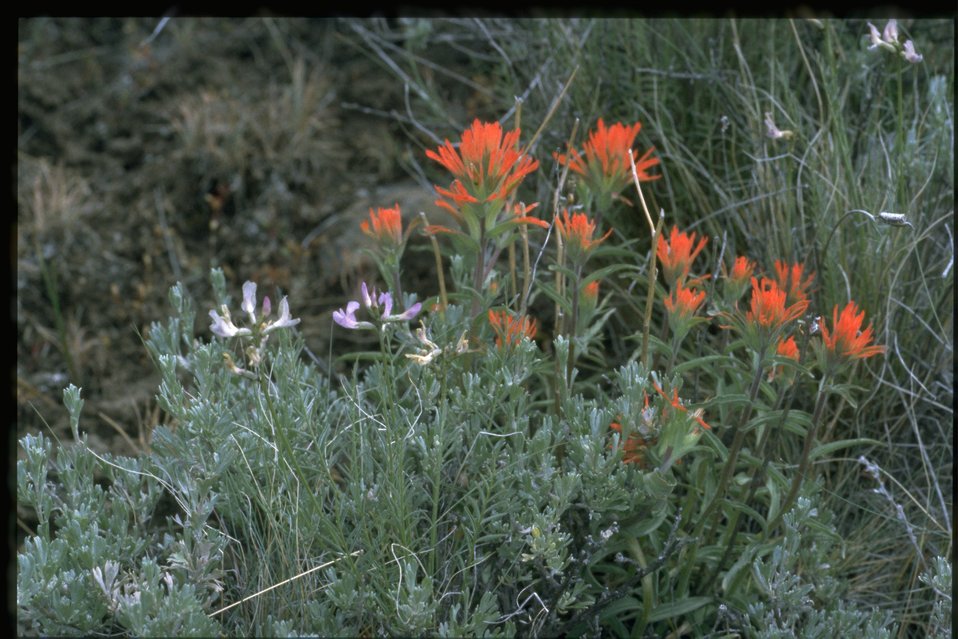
Farshot of wavyleaf paintbrush (Castilleja applegatei) and Idaho milkvetch (Astragalus conjunctus) among big sagebrush (Artemisia tridentata).